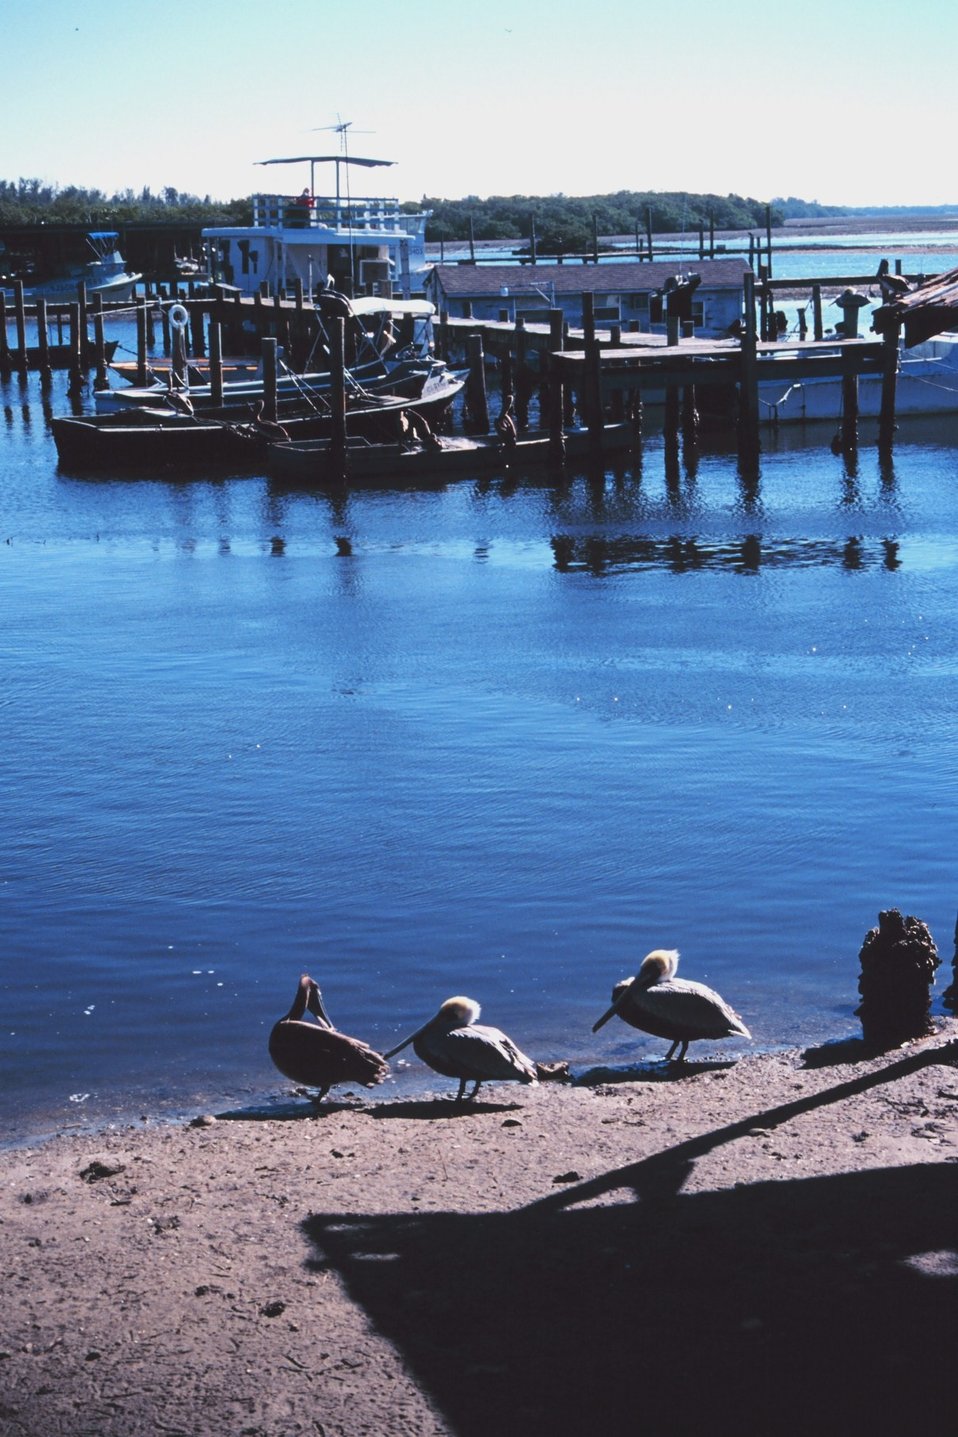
Pelicans and seagulls frequent the A. P. Bell Fish Co.